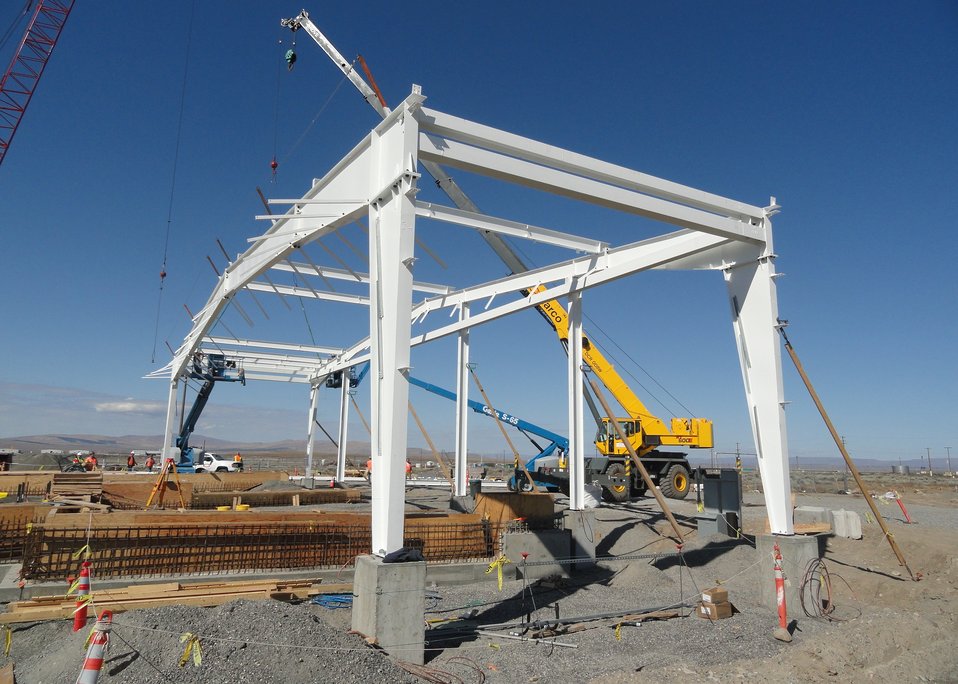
Recovery Act funds demolition of 380,000 Square Feet of Concrete Facilities near Columbia River

Demolition of the 100K West Reactor Water Treatment Facilities during the year-long Recovery Act-funded demolition effort.